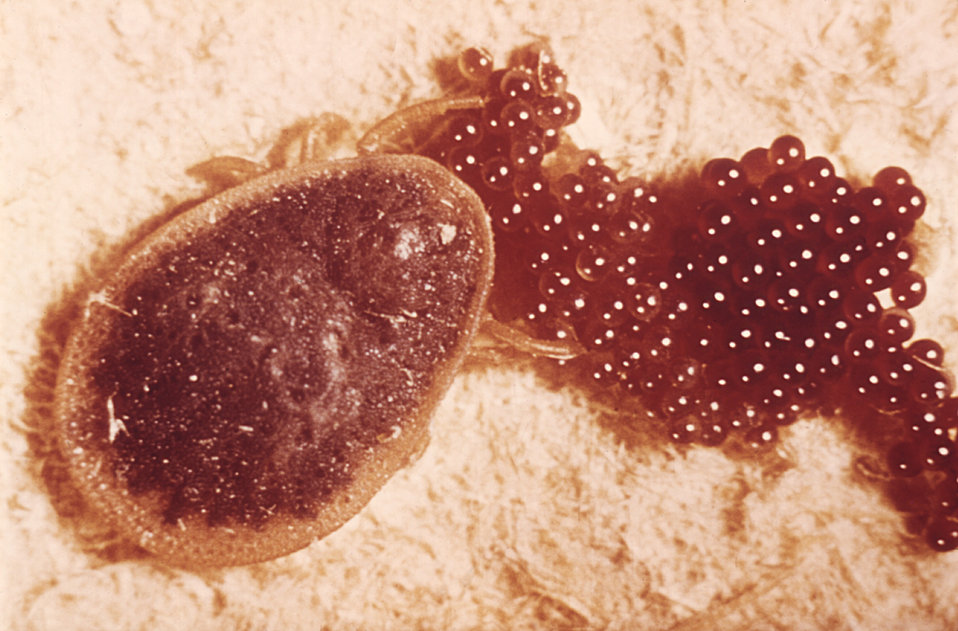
This is a member of the Argasidae family of 'soft ticks', a North American tick with it ventrally located mouth parts.